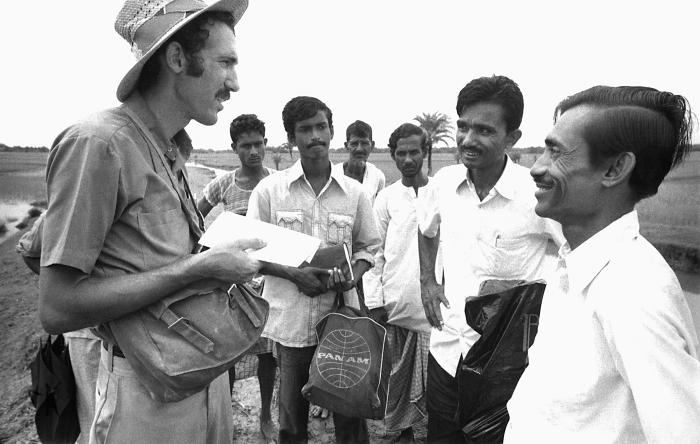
This 1975 image depicted former Peace Corp Volunteer, Ethiopia, and WHO Smallpox Operations Officer, Alan Schnur, discussing smallpox eradication protocols with local Bangladesh residents. He was one of the program's best team leaders in the field, conducting investigations, and administering vaccinations from thana to thana. When eradication efforts began, there was one surveillance team for each of the 5 regions. With increasing volunteerism this grew to one team for each of the 55 districts, and in some regions, one team was assigned to each 'thana'. A thana is analogous to a county in the United States. There were 415 thana to patrol.Local residents who became resident vaccinators, played a profound role in achieving a successful outcome to the eradication program. As locals, they were viewed as familiar, and trusted, and spoke the local dialect, thereby, facilitating enhanced communication with fellow inhabitants.